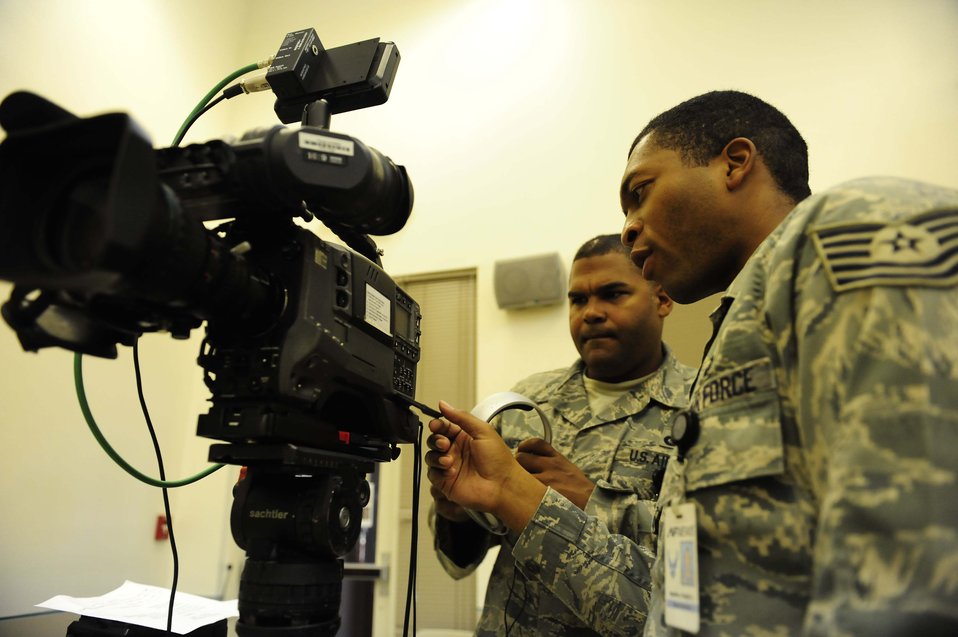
Holiday Greetings teams ready to deploy

Staff Sgt. James Zannetti (left) goes over camera techniques and composition with holiday greetings veteran Tech. Sgt. Dwight Hawkins Aug. 27, 2009, during preparations for the taping of video holiday greetings at more than 60 locations worldwide. The two NCOs are broadcasters with the Joint Hometown News Service in San Antonio.